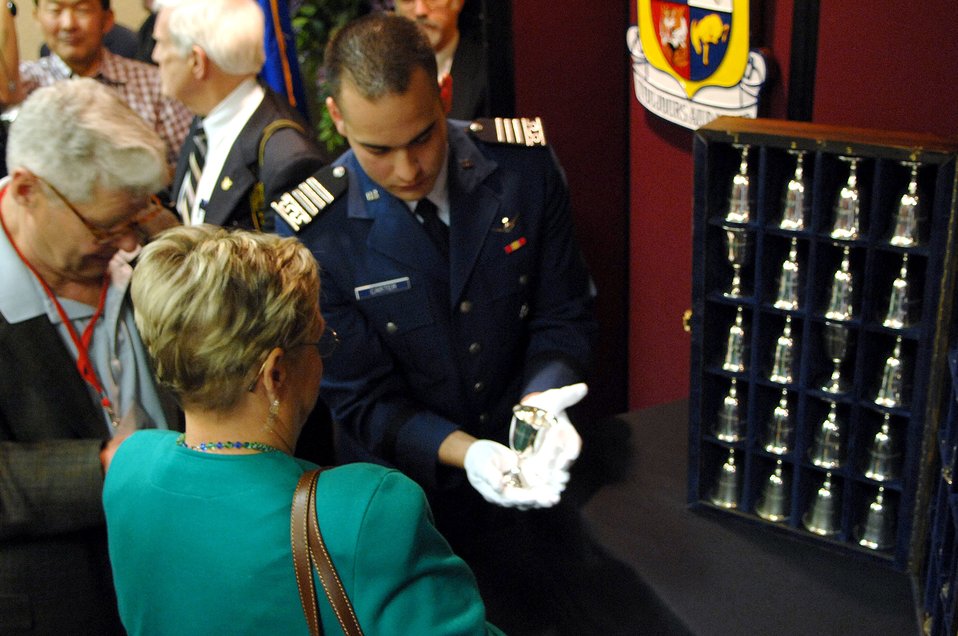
Raider goblet ceremony

Air Force Academy Cadet 1st Class Michael Carter shows Connie McClure the goblet of her father-in-law, Charles L. McClure, after a goblet ceremony in San Antonio April 18. There are 80 goblets representing each of the Doolittle Raiders. When a Raider dies, his goblet is turned over in the case. When there are but two Raiders left, the two men will open a bottle of cognac, vintage 1896 (the year Doolittle was born) and give a final toast to their departed comrades. Fourteen of the 80 Raiders are still alive.